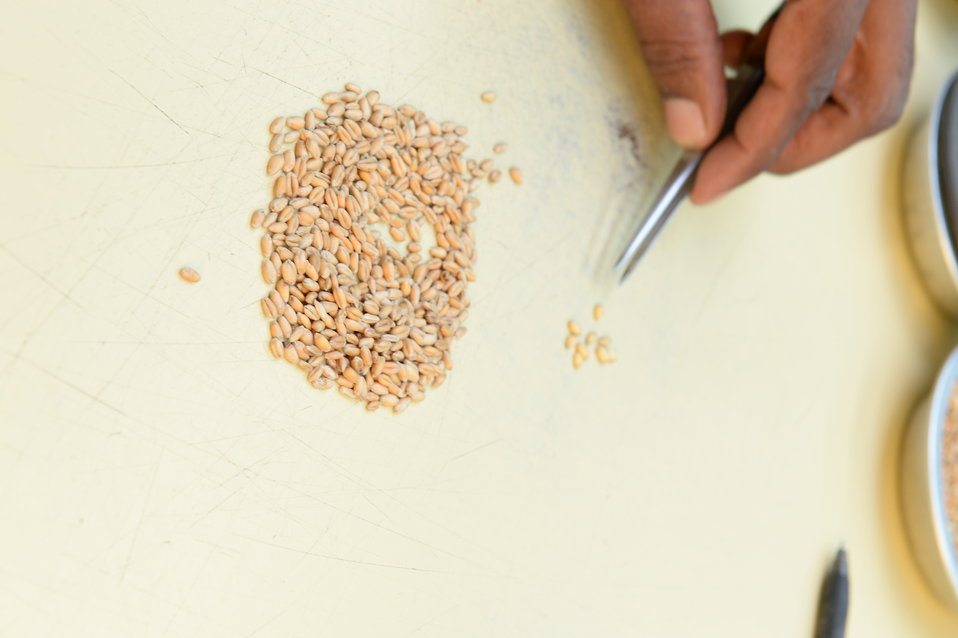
A U.S. Department of Agriculture (USDA) Grain Inspection, Packers and Stockyards Administration (GIPSA) Federal Grain Inspection Service (FGIS) scientist tests wheat at the FGIS inspection laboratory in New Orleans, LA on Monday, Nov. 18, 2013.